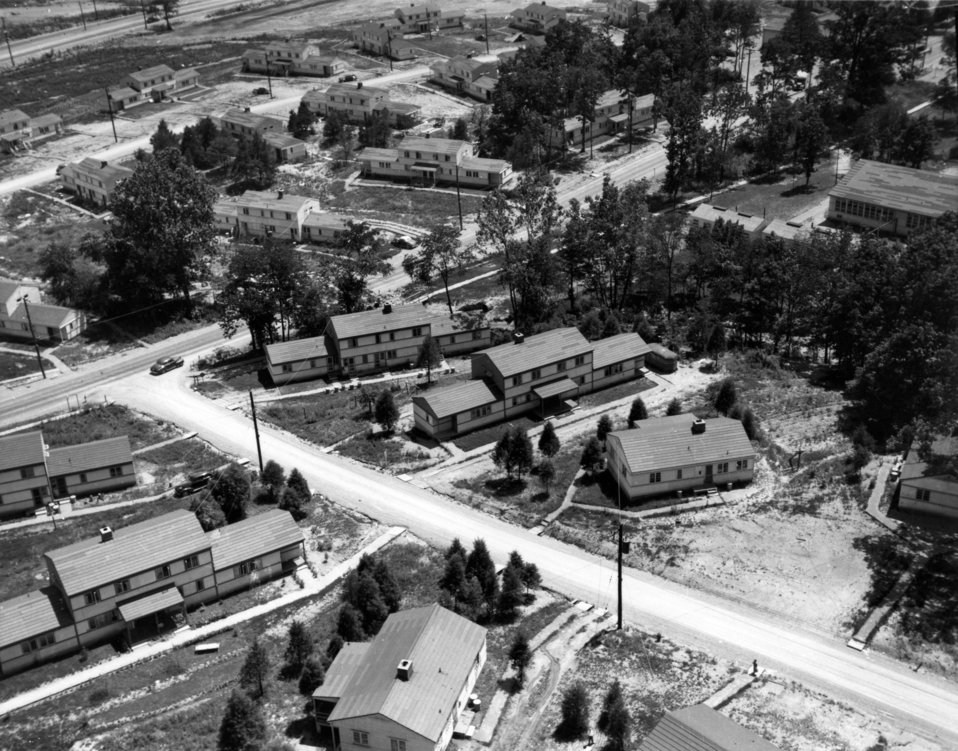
Aerial of Oak Ridge